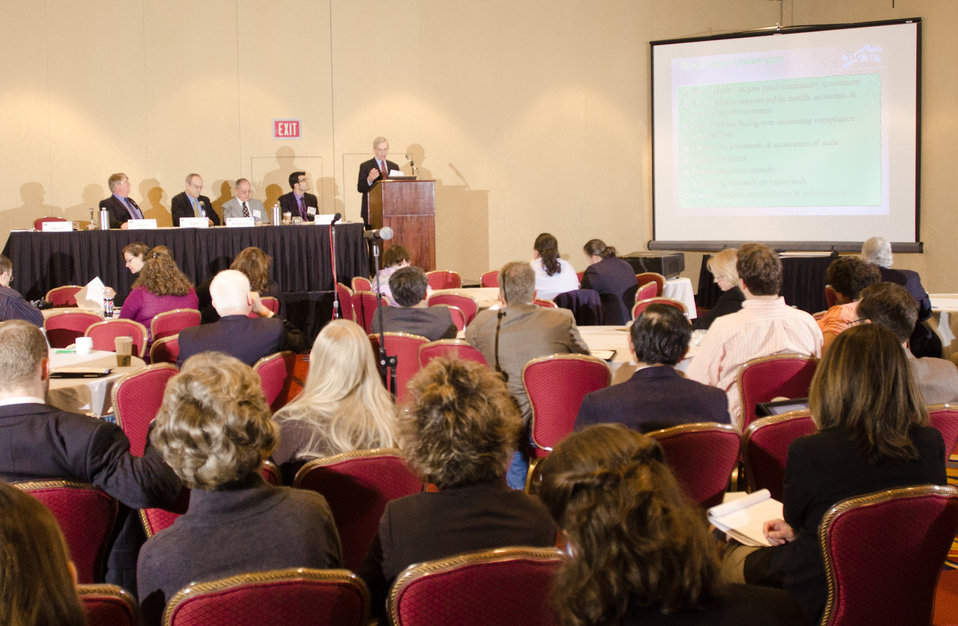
Rural Community Assistance Partnership, Inc., Executive Director Robert Stewart spoke at the Rural Development session on “Why Every American Should Care About the Future of Rural Water,” at the 2012 Agricultural Outlook Forum, “Moving Agriculture Forward, Growing, Innovating and Celebrating 150 Years” held at the Crystal Gateway Marriott Hotel, Arlington, Virginia, on Friday, February 24, 2012. This year’s forum coincides with the 150th anniversary of the Department of Agriculture addressing economics, marketing, research, food safety, nutrition, conservation, rural development, alternative energy, trade and many other agricultural issues.